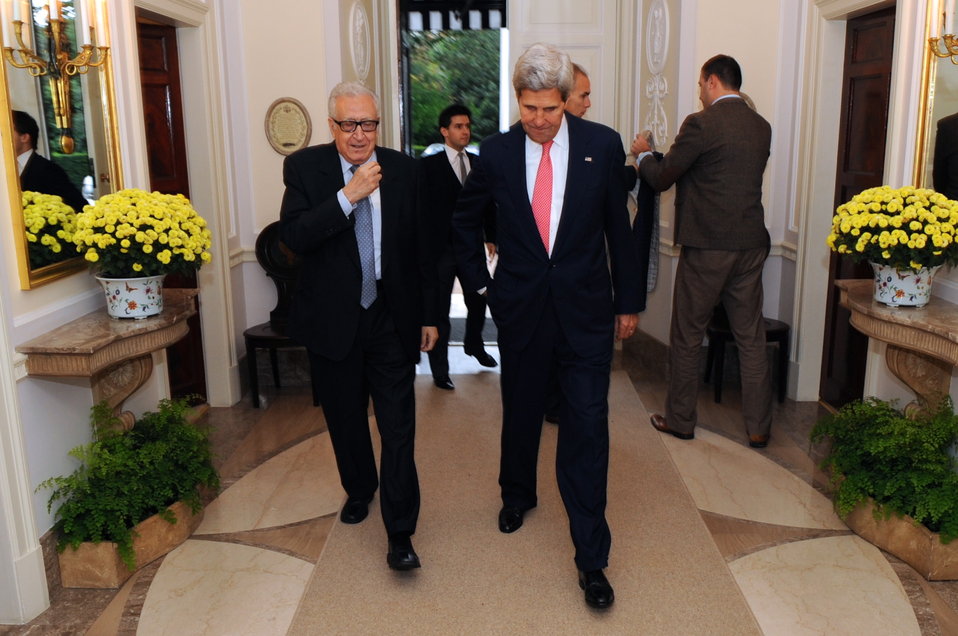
Secretary Kerry Welcomes Special Representative Brahimi to London

U.S. Secretary of State John Kerry welcomes Lakhdar Brahimi, the United Nations Special Representative for Syria, to the U.S. Ambassador's Residence in London, United Kingdom, on October 14, 2013.